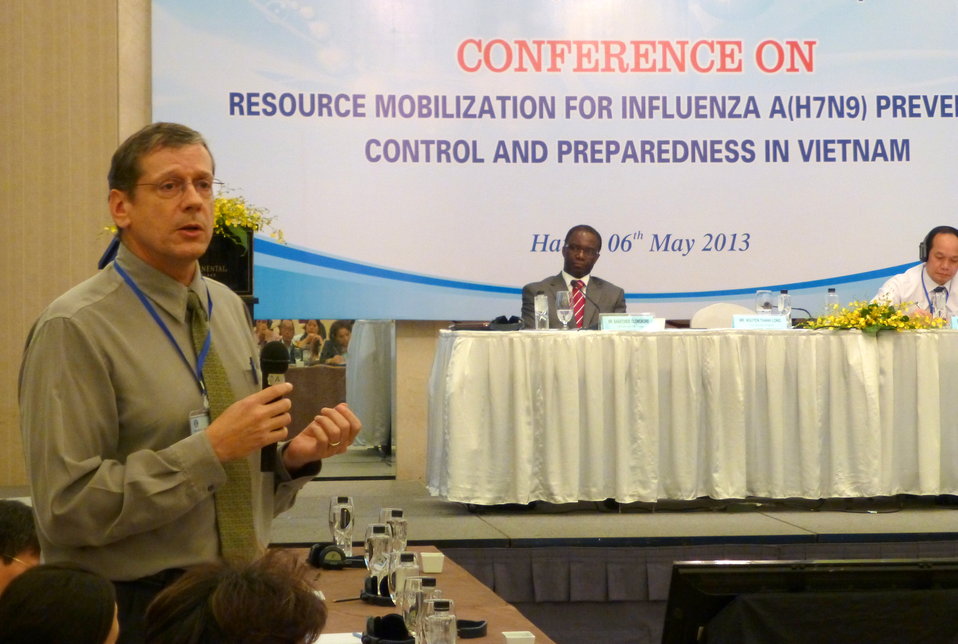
Dr. Tim Meinke, USAID, speaks at the Conference on Resource Mobilization for Influenza A (H7N9) Prevention, Control and Preparedness in Vietnam

Hanoi, May 6, 2013
Supported by USAID Vietnam